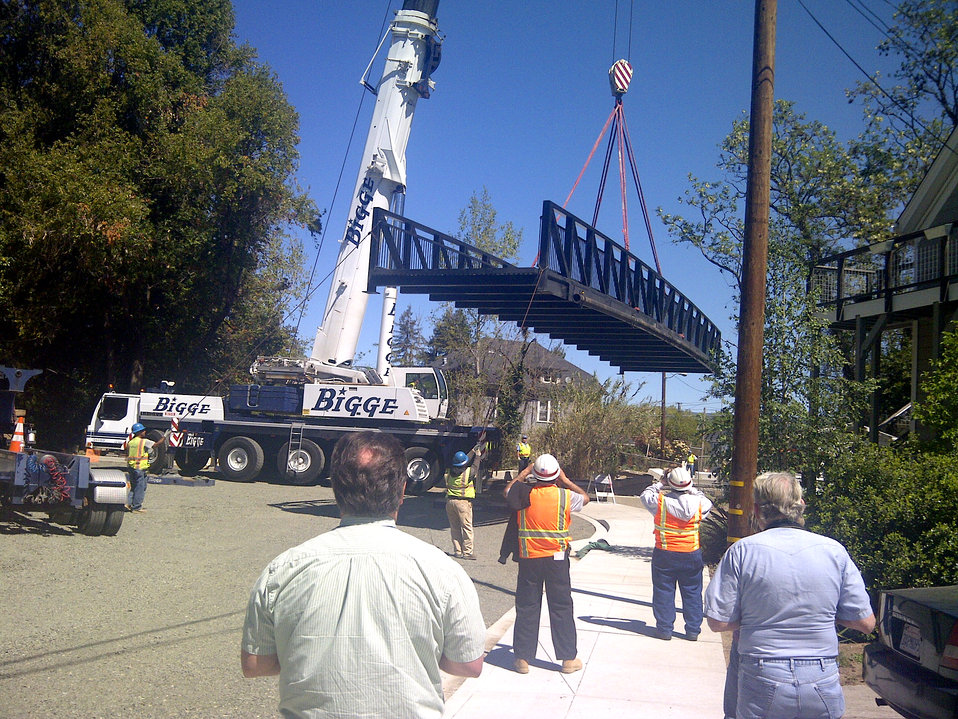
New pedestrian bridge last major phase of Corps’ Napa Creek project

Napa Residents watch as a crane lifts and moves a new 70-foot-long pedestrian bridge into place over the Napa Creek April 9, 2013 in Napa, Calif. The bridge replaced an old vehicle bridge that was too low and often blocked debris in the creek, causing flooding into the neighboring homes and businesses. Installing the bridge was the last major phase of a $14.8 million flood risk reduction and habitat restoration project, funded by the American Recovery and Reinvestment Act of 2009. The project is a joint effort by the Corps, the city of Napa and the Napa Flood Control and Water Conservation District and is set to be finished in May.